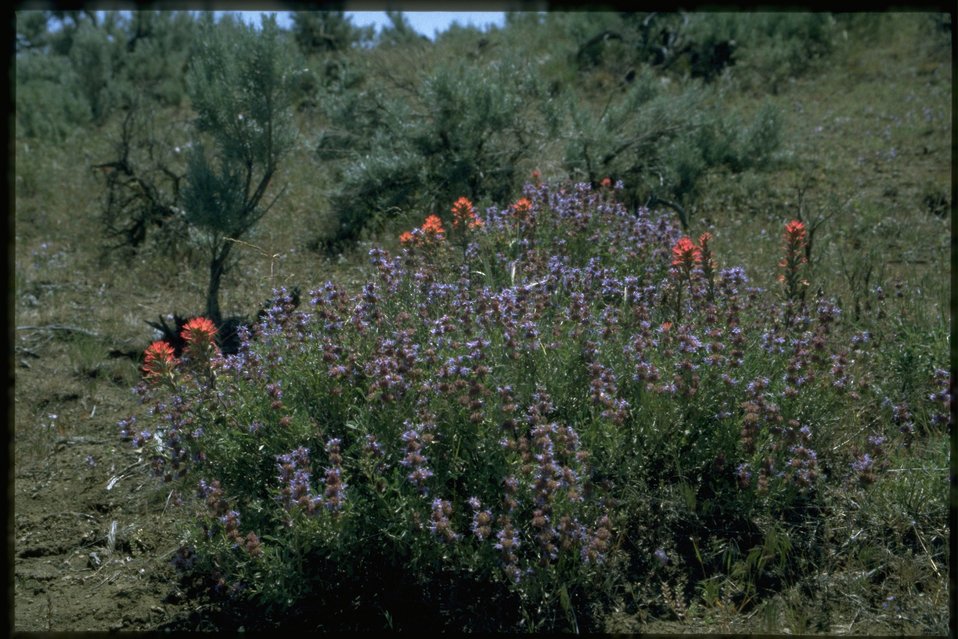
Medium shot of Castilleja and Salvia dorrii.